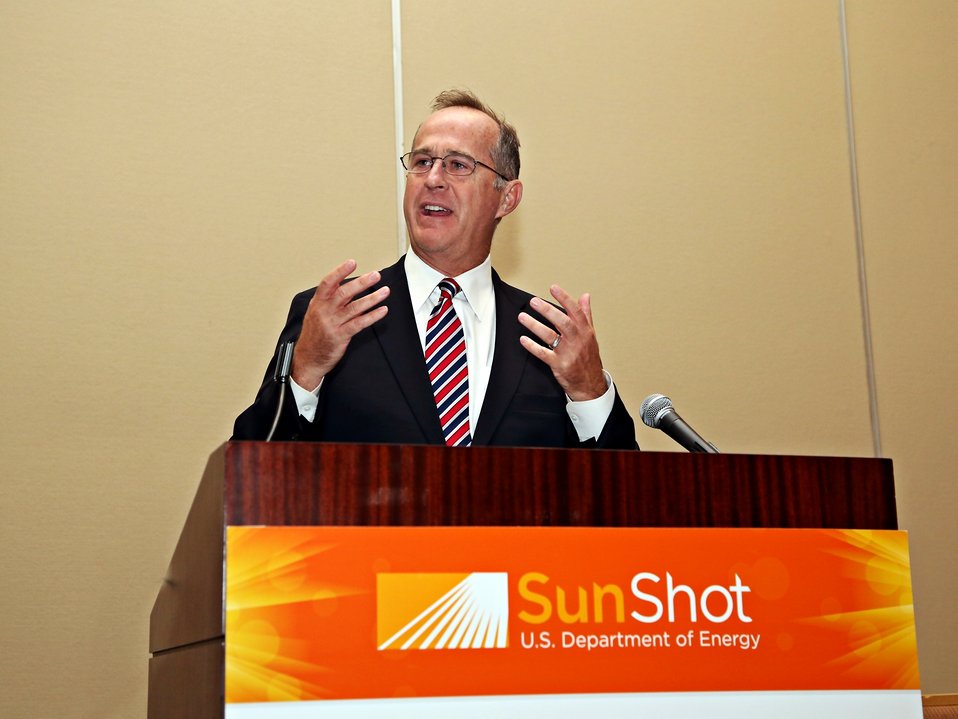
Opening Session 4

Anaheim Mayor Tom Tait speaking at the opening session.